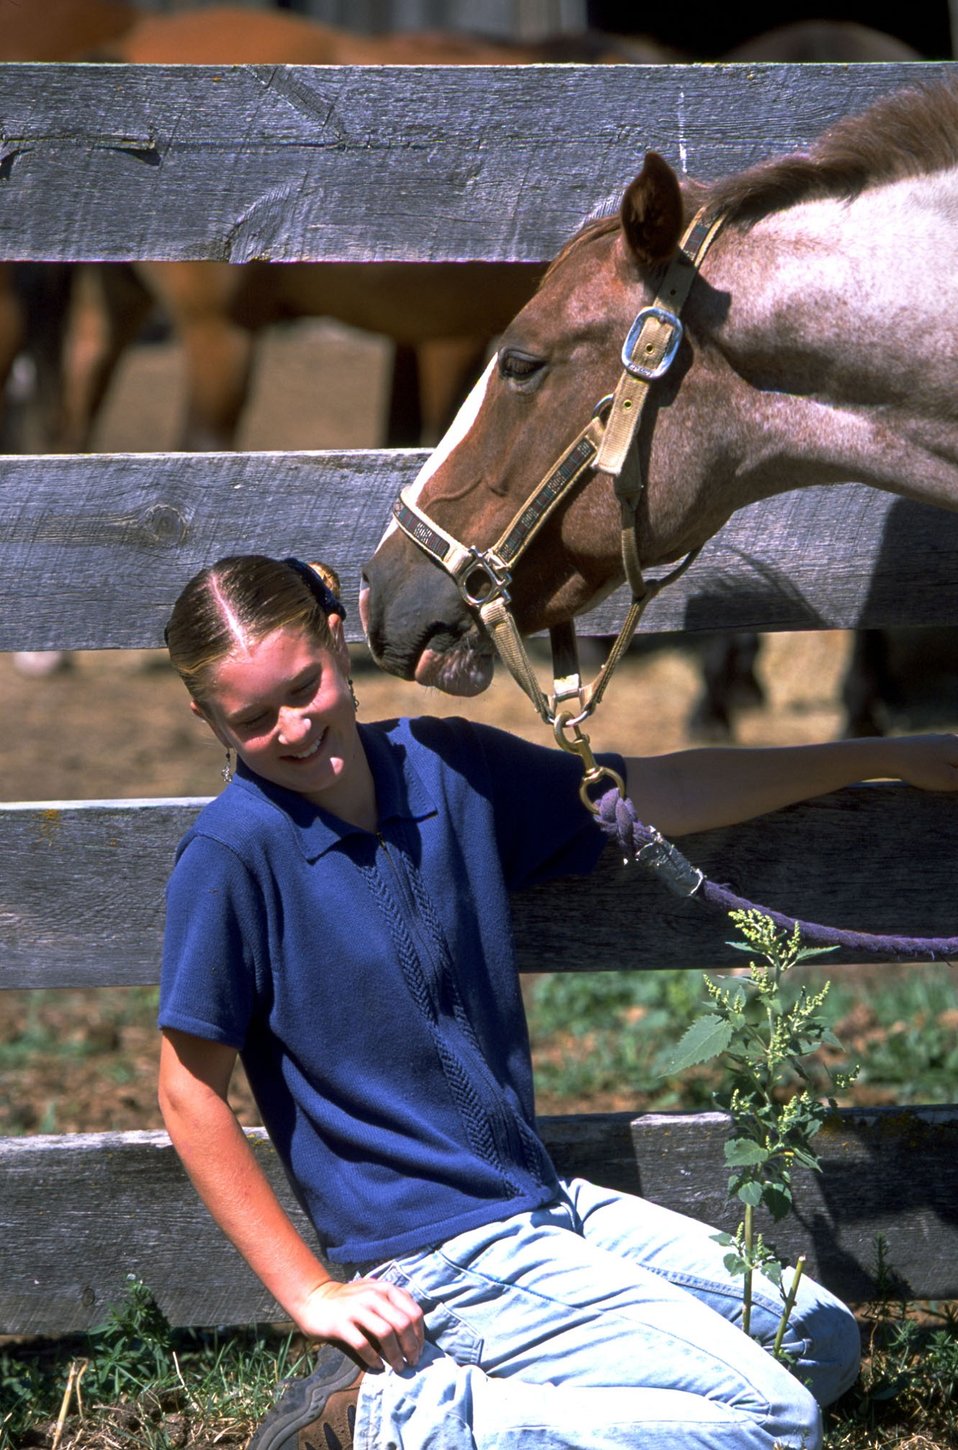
Adopted horse with a Friend